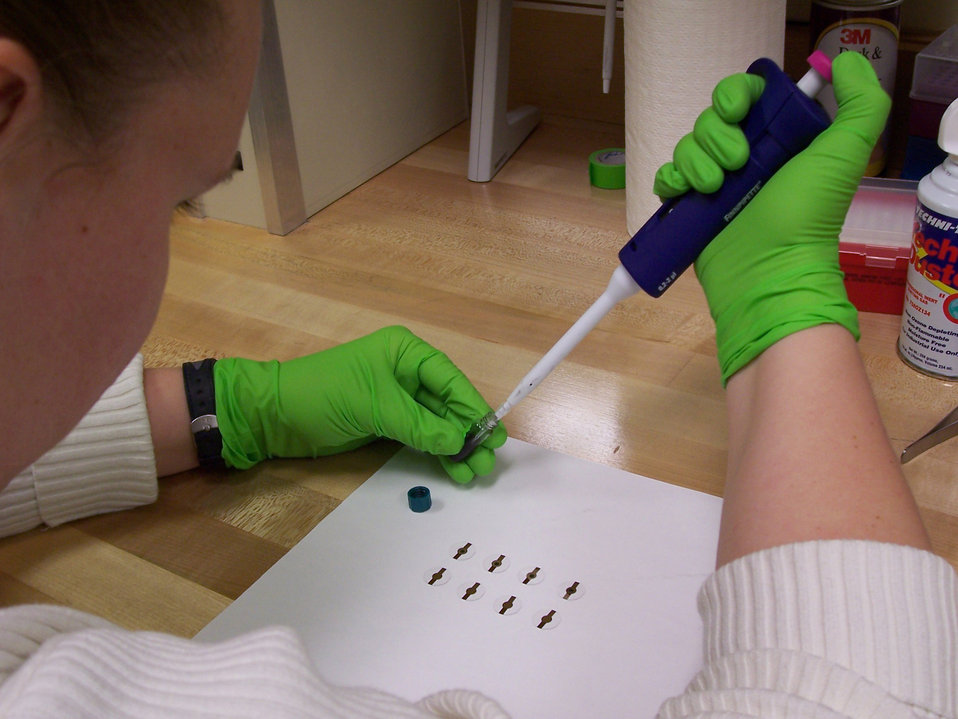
Piezoelectric Quartz Crystals

Small piezoelectric quartz crystals are the key to micro thermogavimetric analysis. Here, minute amounts of the test sample are deposited on the crystals.